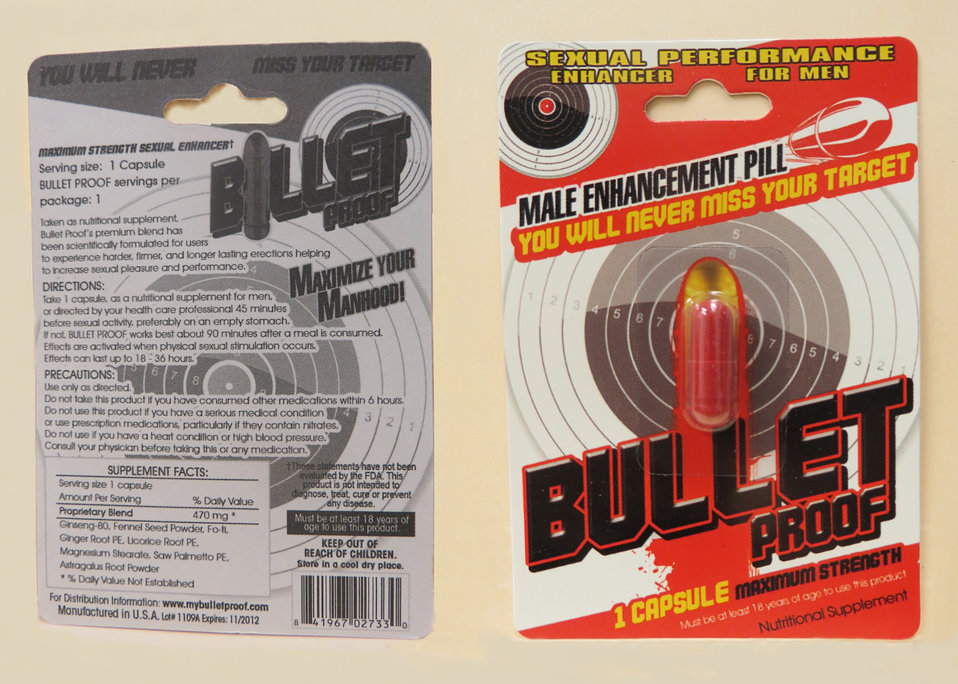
Bullet Proof

May 7, 2013 - The FDA is advising consumers not to purchase or use 'Bullet Proof,' a product promoted and sold for sexual enhancement. The product was found to contain undeclared tadalafil. For more information, go to www.fda.gov/Drugs/ResourcesForYou/Consumers/BuyingUsingMe...

And read this Consumer Update: Beware of Fraudulent ‘Dietary Supplements’